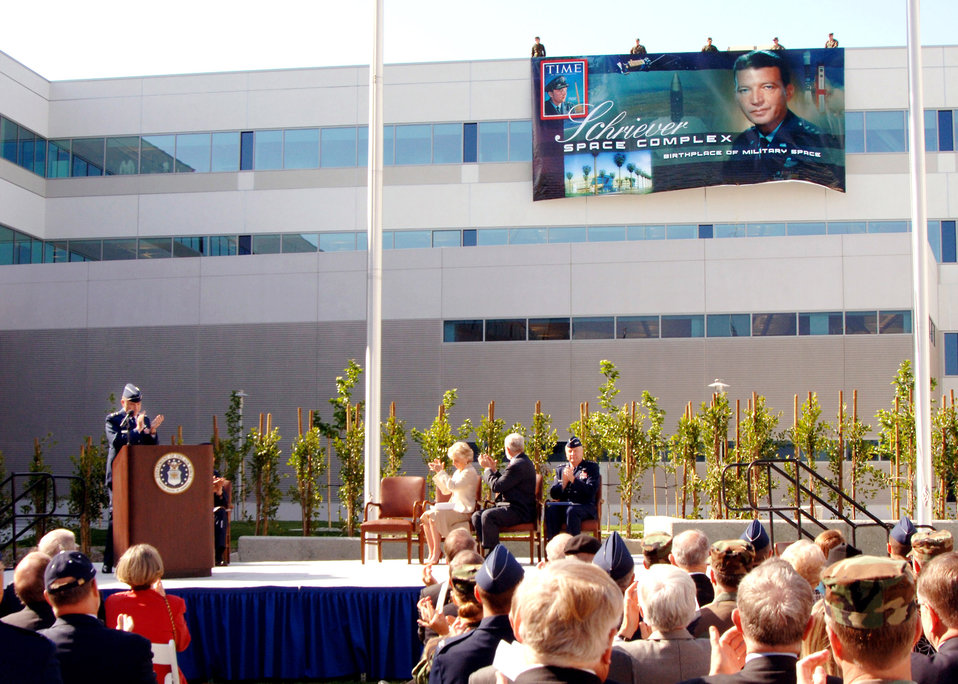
Los Angeles AFB dedicates new Schriever Space Complex

The audience applauds as a banner is unfurled during the dedication of the new Schriever Space Complex in El Segundo, Calif., on Monday, April 24, 2006.